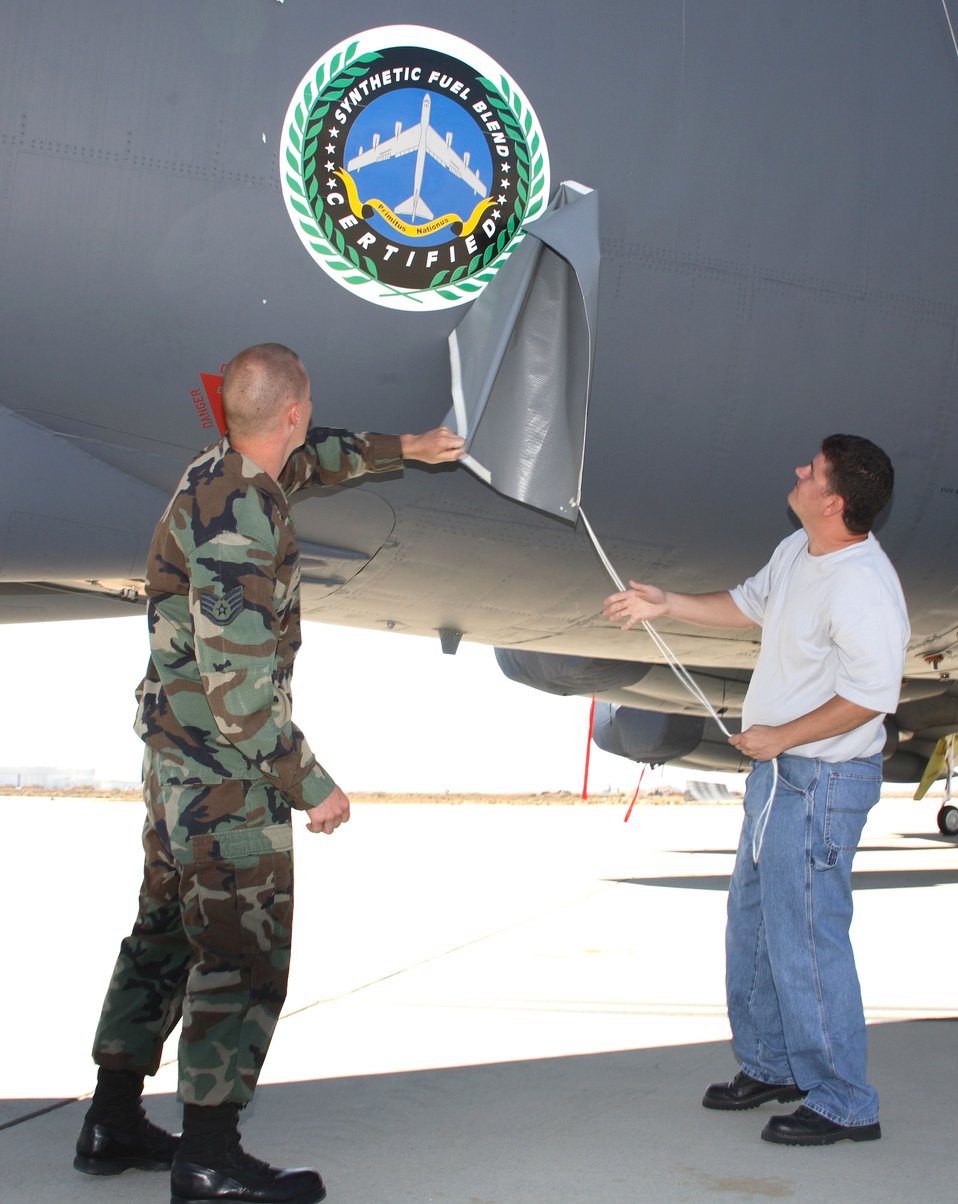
SECAF certifies Fischer-Tropsch synthetic fuel blends for B-52H

Staff Sgt. Joe Wallis and Johnny Sniderhan reveal the Fischer-Tropsch synthetic fuel blend certification logo painted on the side of a B-52H Stratofortress at the certification ceremony at Edwards Air Force Base, Calif., Aug. 8. Sergeant Wallis is with the 31st Test and Evaluation Squadron; Mr. Sniderhan is with the 912th Aircraft Maintenance Squadron.